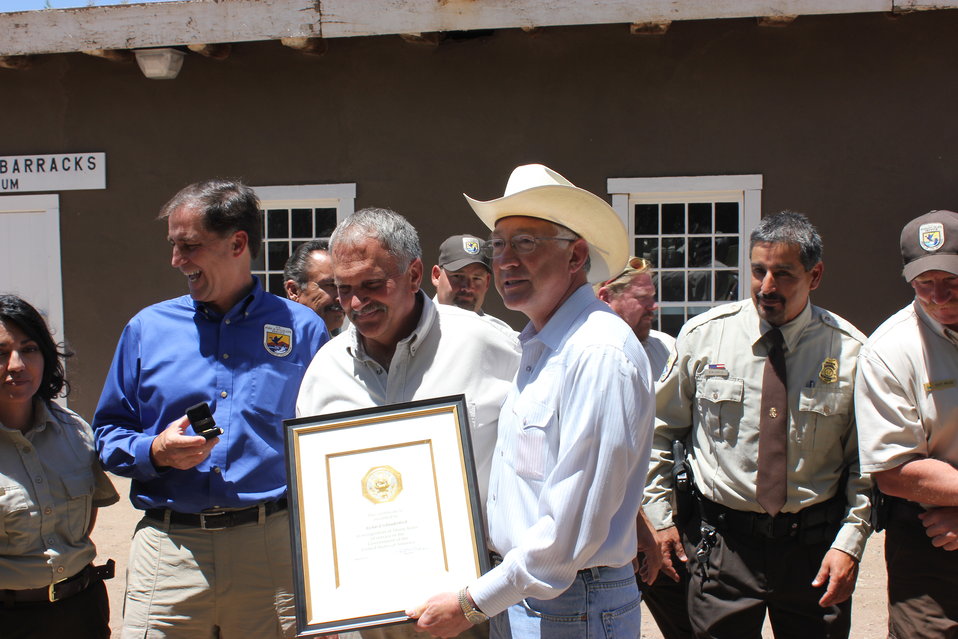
Historic Conservation Easement in Sangre de Cristo Mountains

Interior Secretary, Ken Salazar, and U.S. Fish and Wildlife Director, Dan Ashe, present Rick Schnaderbeck with an award for his many accomplishments throughout his 30 years with the Service.